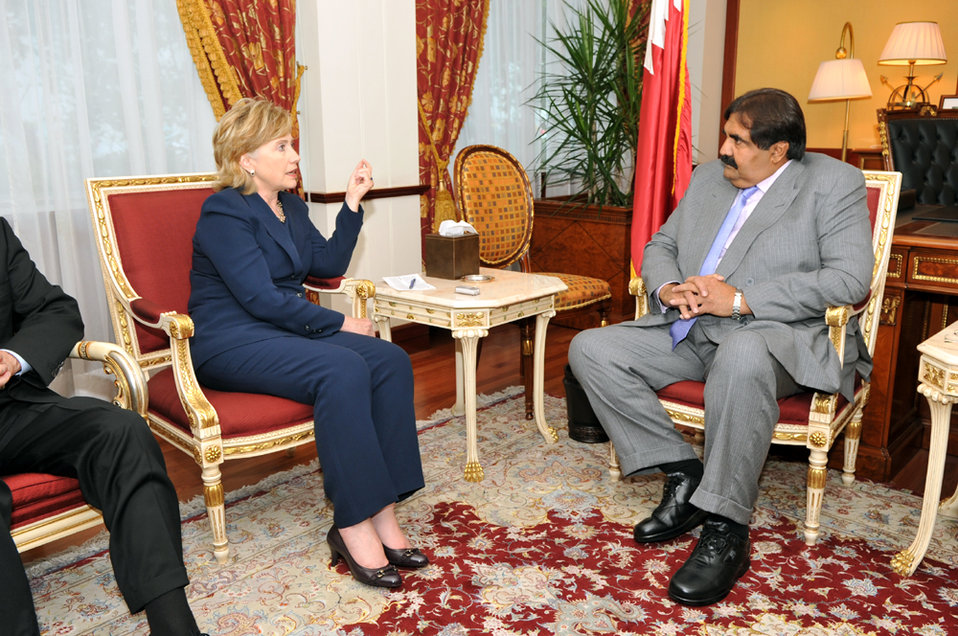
UNGA 2009: Secretary Clinton Meets With Qatar Amir Sheikh

U.S. Secretary of State Hillary Rodham Clinton meets with Qatar Amir Sheikh Hamad bin Khalifa Al Thani at the Qatar Mission in New York City, New York September 24, 2009.